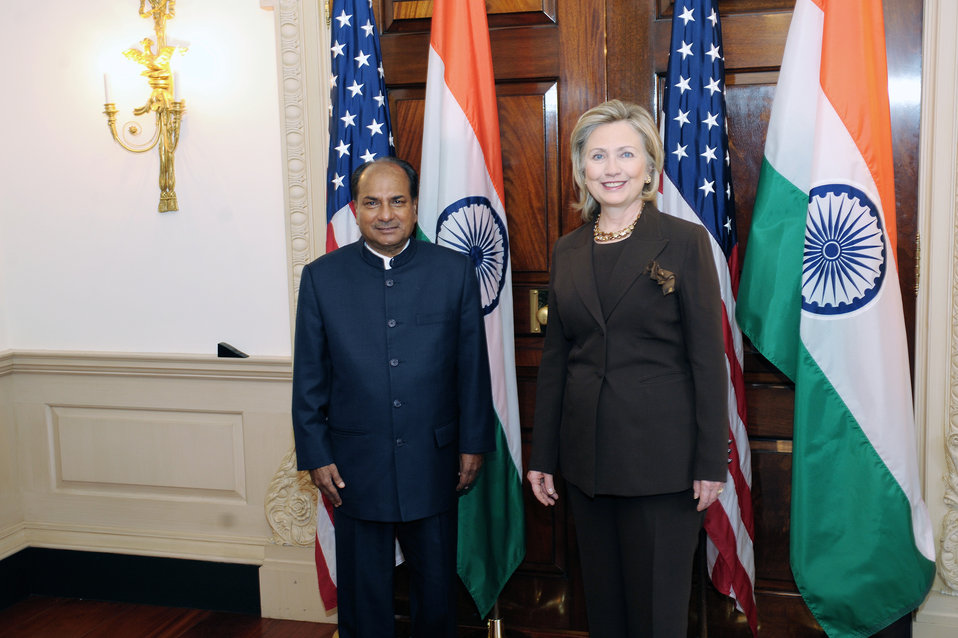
Seceretary Clinton With Indian Defense Minister A.K. Antony

U.S. Secretary of State Hillary Rodham Clinton poses for a photo with Indian Defense Minister A.K. Antony after their bilateral meeting at the U.S. Department of State in Washington, D.C., on September 28, 2010.